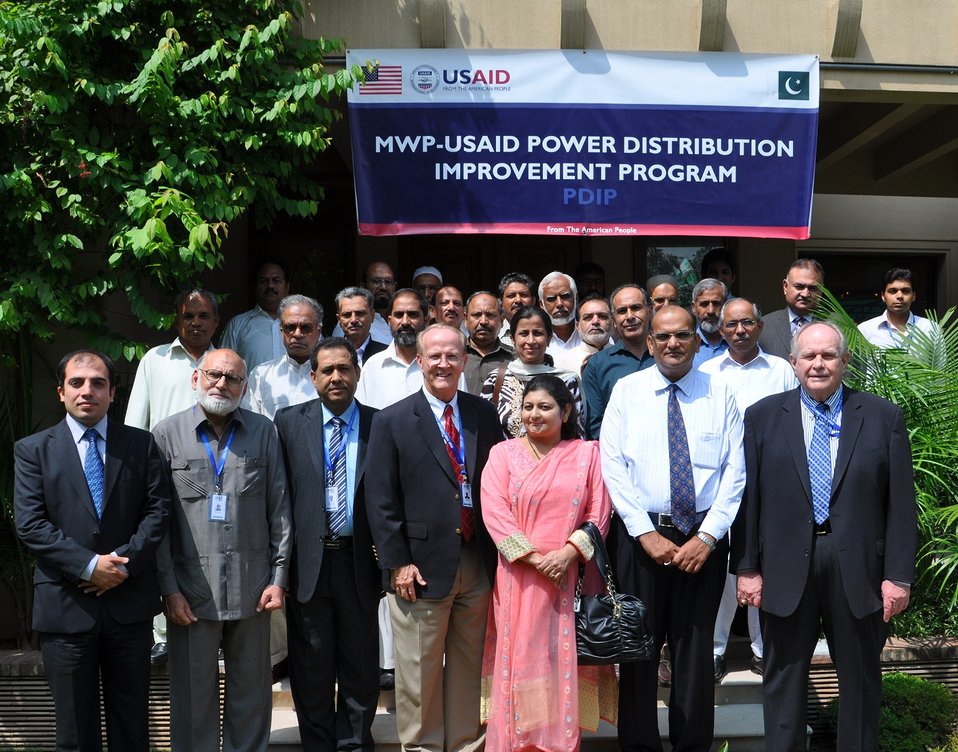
9 Sept, 2011 Introduction of Internal Audit Manual for Power Distribution Companies (DISCOs) Group Photo

Group Photo:
USAID Power Distribution Program in a workshop on September 9, 2011 kicked-off the new internal audit manual for power distribution companies (DISCOs). The new internal audit manual shall improve DISCO operational efficiencies that will help reduce cost, improve revenue and internal controls, and by assisting prevention and detection of frauds and irregularities. Ms.Rukhsana Gilani (Chief Internal Auditor, PEPCO) and Mr.Gulam Mustafa (Chief Internal Auditor,WAPDA) also attended the event.